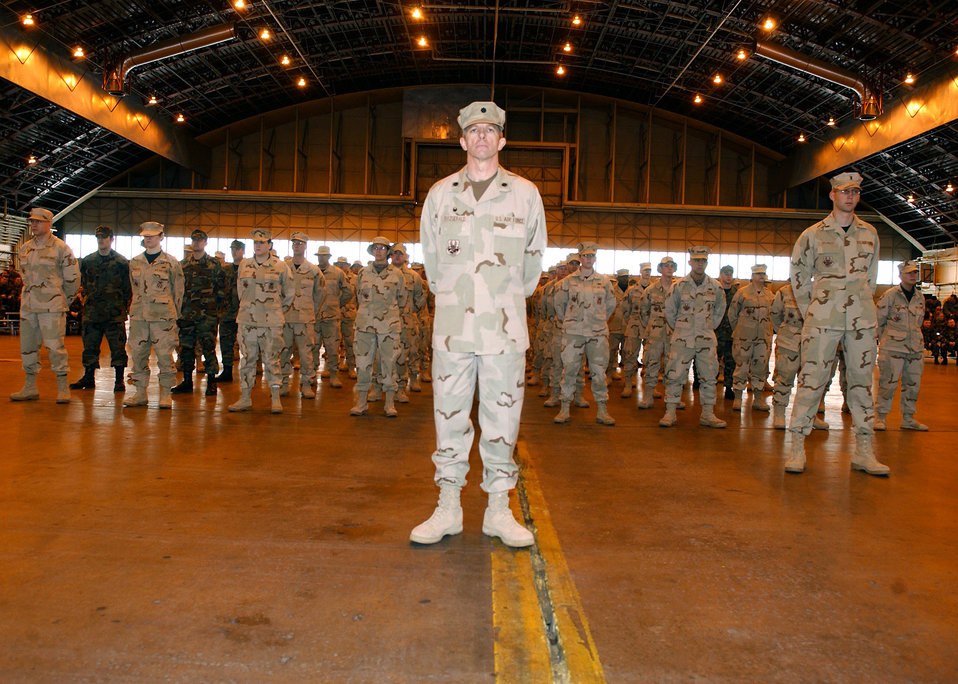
Welcome Home Ceremony

Lt. Col. Mike Fitzgerald, 354th Logistics Readiness Squadron commander, sets the squadron at ease in the Thunderdome at Eielson Air Force Base, Alaska March 9. The 354th Fighter Wing held a Welcome Home Ceremony honoring more than 400 Airmen who returned from deployments over the past six months.